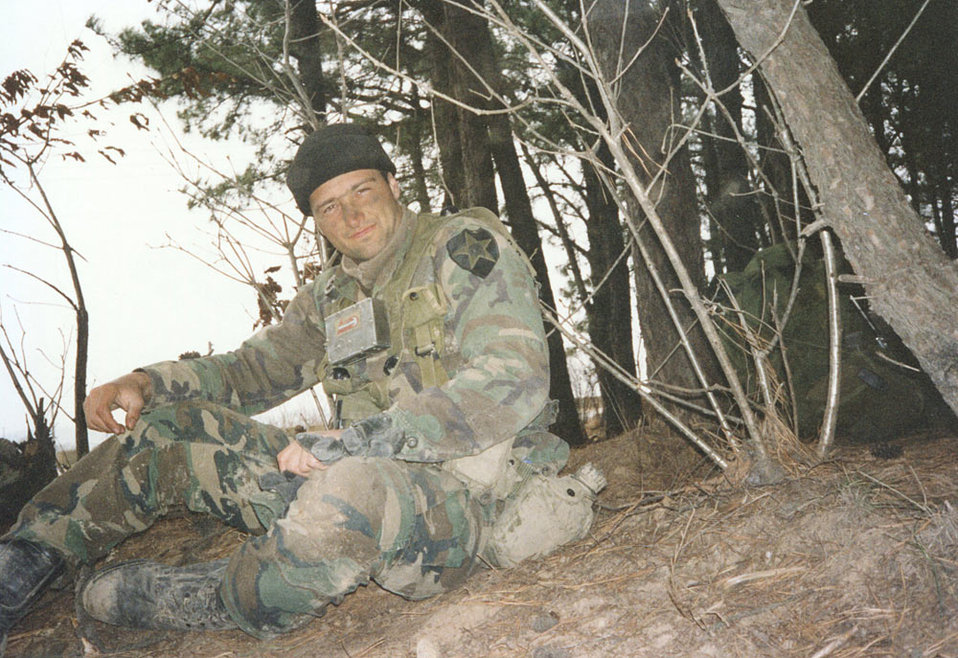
Allan Kirkpatrick--Southwest Region

Allan Kirkpatrick served in the Army from 1992 to 1996. He is now a Federal Wildlife Officer at Buenos Aires National Wildlife Refuge in Sasabe, Arizona.